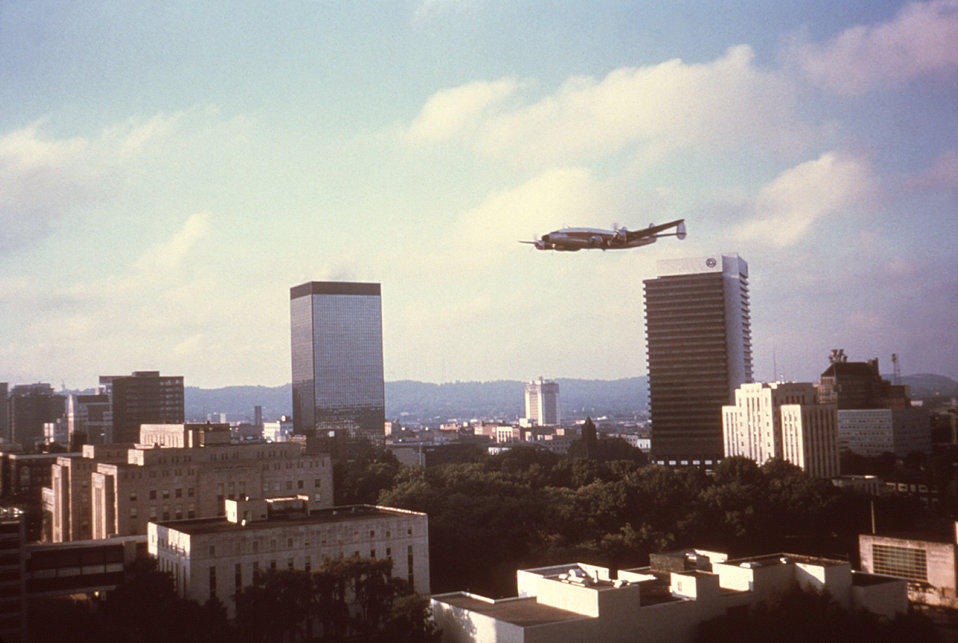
This 1975 photograph depicts a Lockheed C-121D 'Super Constellation' aircraft being flown over Birmingham, Alabama to disperse an ultra-low volume (ULV) insecticidal fog.